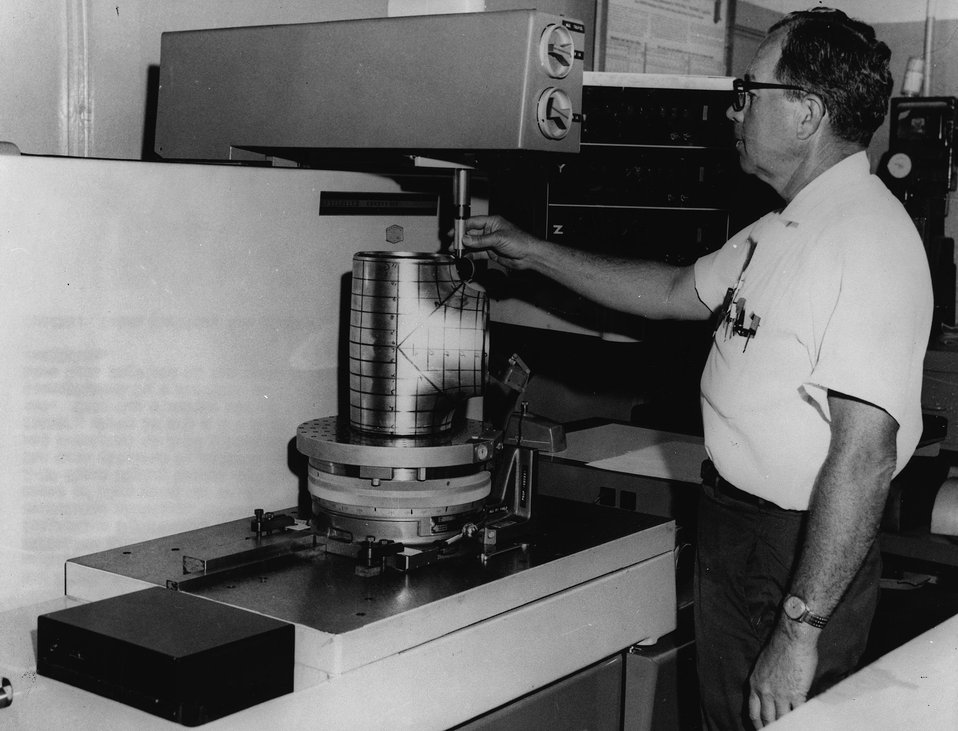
A three axis measuring machine is shown being used by Oak Ridge Gaseous Diffusion Plant (ORGDP) Dimensional and Instrument Inspection Department, Laboratory Division, for coordinate plotting, contour and profile measurements of high pressure welding fittings for the X-10 Plant Piping Stress and Flexibility Studies. c. 1968